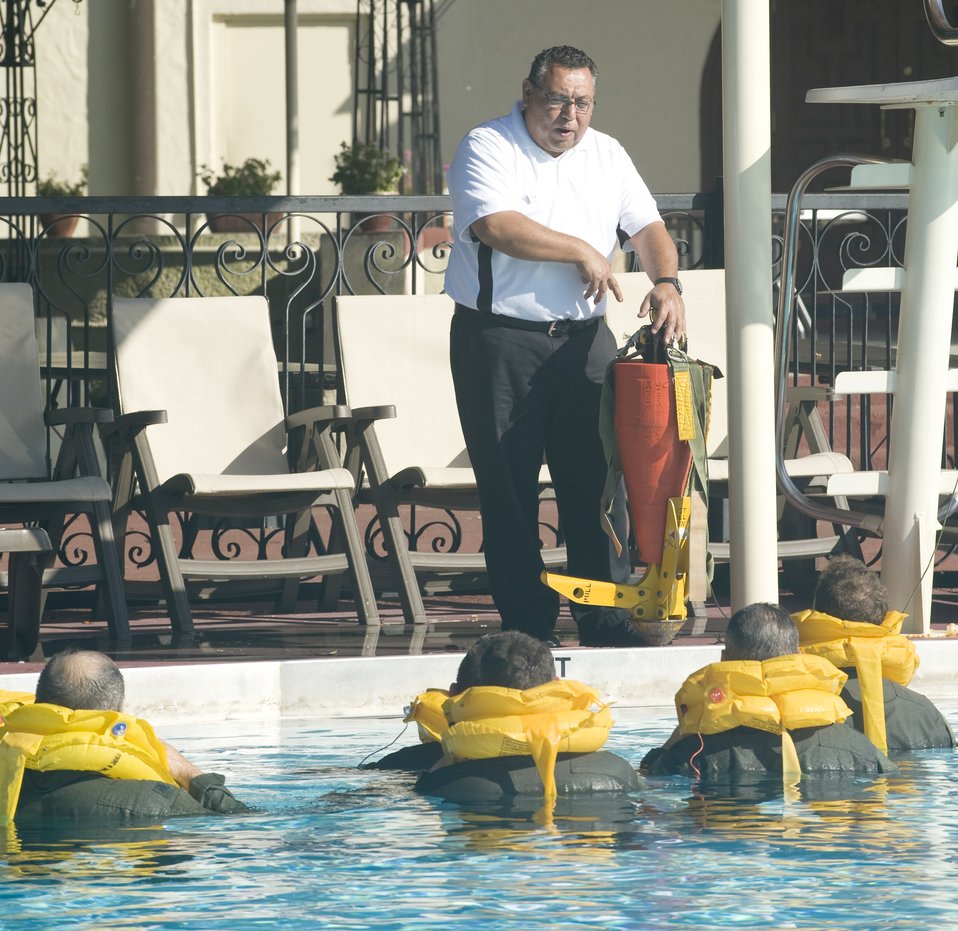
Water survival skills

Mr. Reynaldo Gutierrez instructs T-1 Jayhawk pilots on the proper use of a water rescue device used with choppers Aug. 6, 2010, at Randolph Air Force Base, Texas. Mr. Gutierrez is an aircrew trainer.